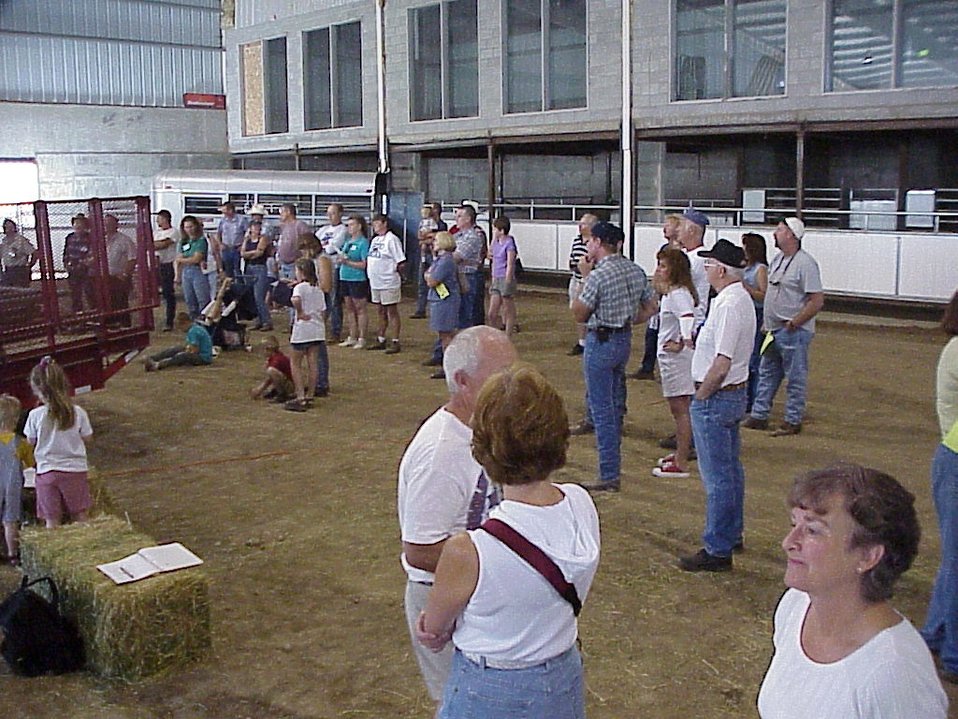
Lewiston Wild Horse and Burro Adoption Program Auction WHB indoor auction Cottonwood Field Office UCSC Upper Columbia Salmon Clearwater District